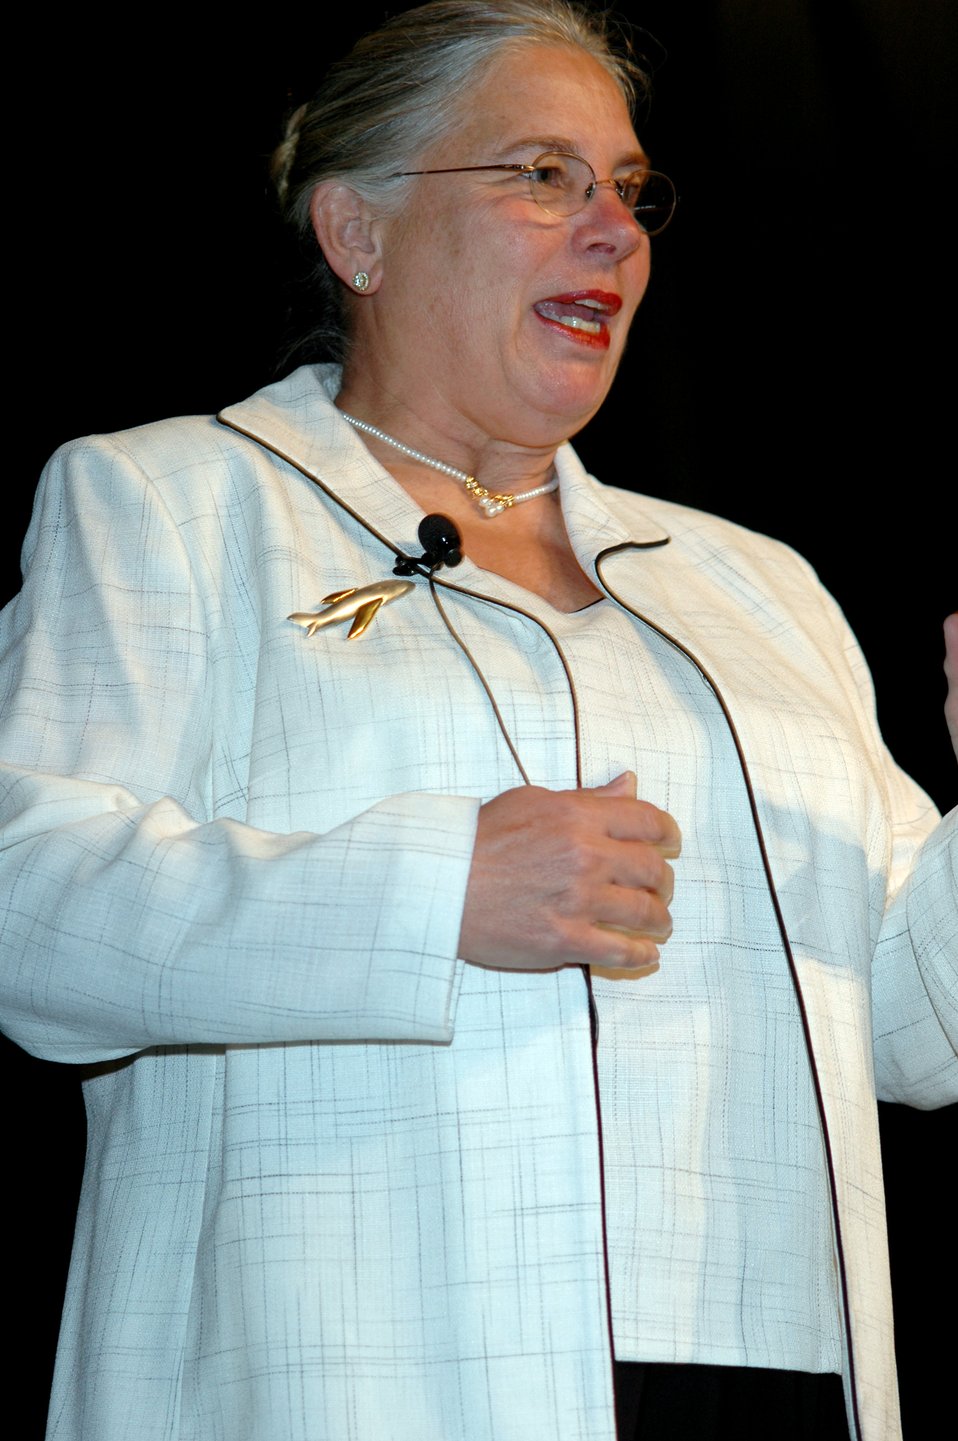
Balance keeps trailblazer on course

Retired Air Force Maj. Gen. Betty Mullis speaks at the 17th International Women in Aviation Conference Friday, March 24, 2006, in Nashville, Tenn. General Mullis was inducted into the organization's Pioneer Hall of Fame March 25.